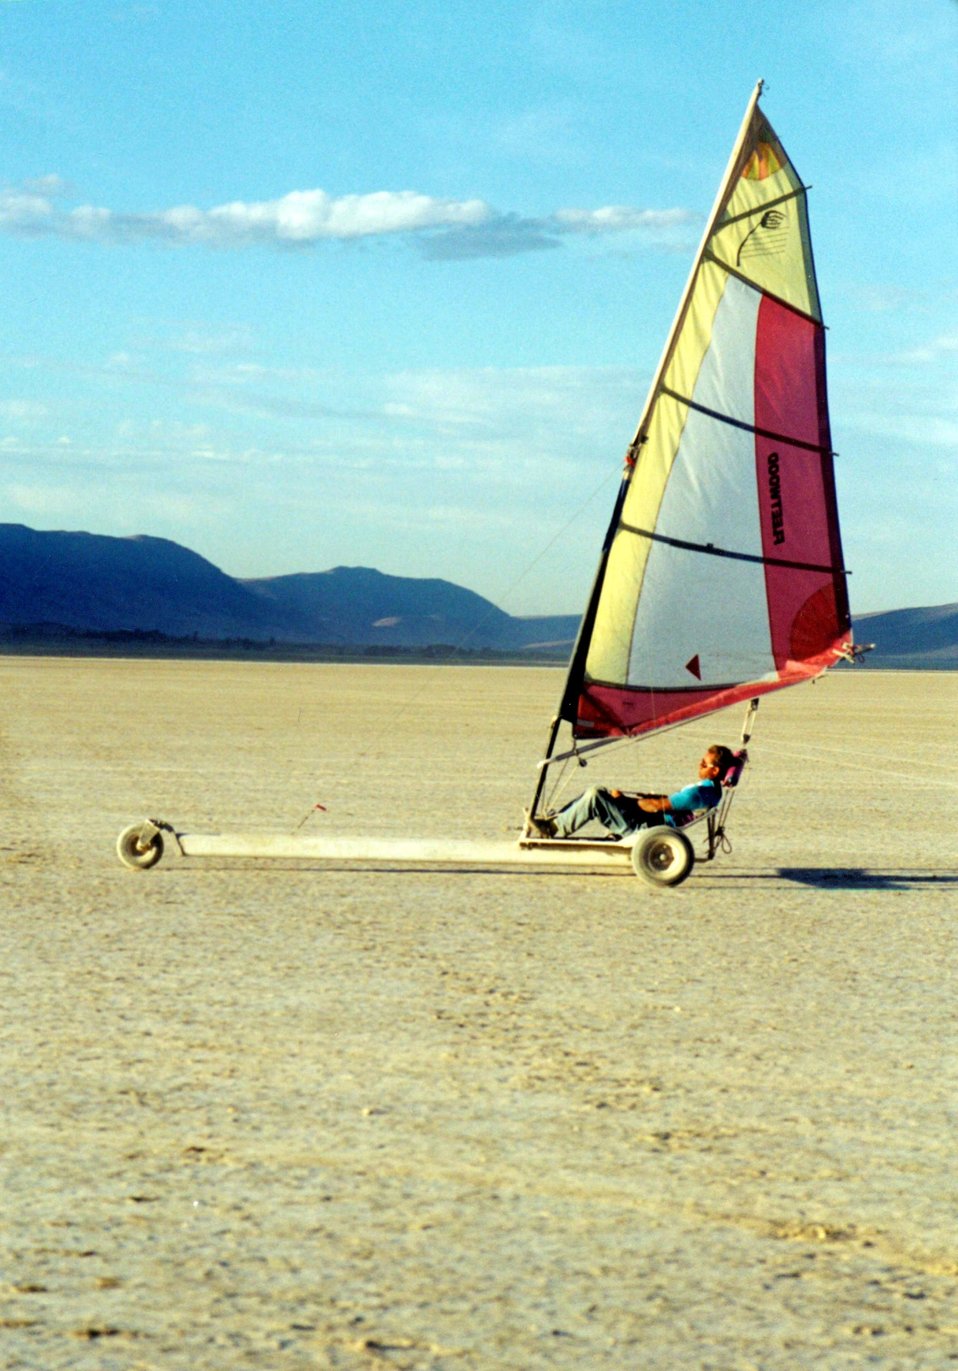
Sand Saling on the Alvord Desert in eastern Oregon.